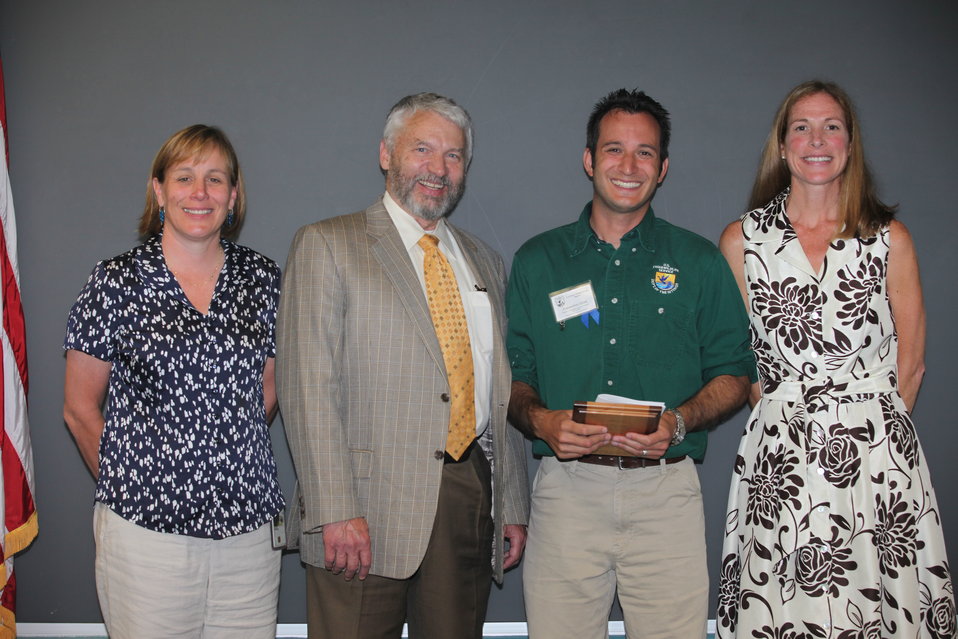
Juancarlos Giese, Rhode Island National Wildlife Refuge Complex, was another to recieve the Region 5 Unsung Hero Award.
From left to right: Deputy Regional Director Deb Rocque, Deputy Director Rowan Gould, Juancarlos Giese and Regional Director Wendi Weber